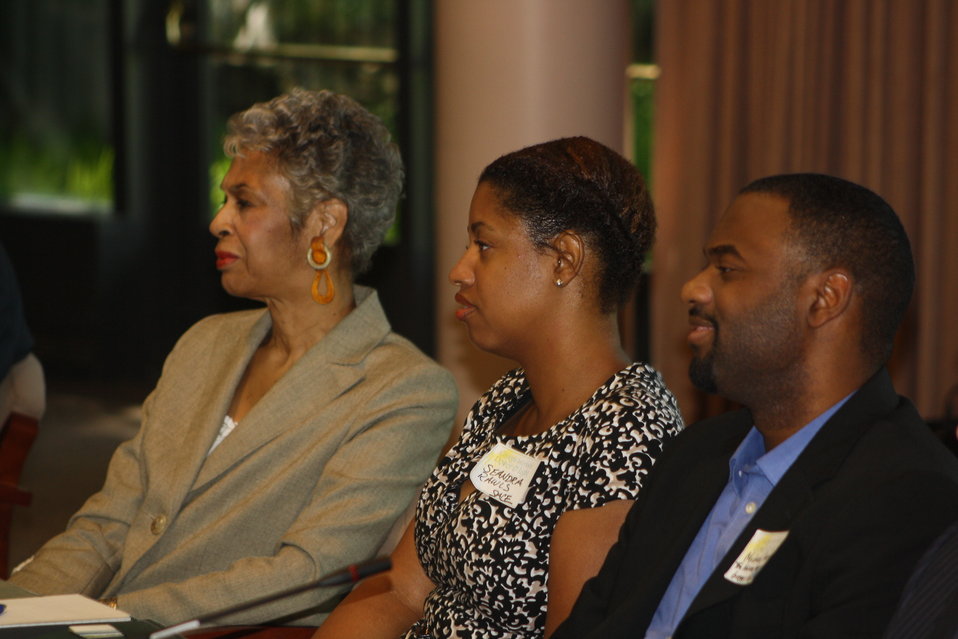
Faith-Based and Neighborhood Partnership launch at Atlanta's Carter Center